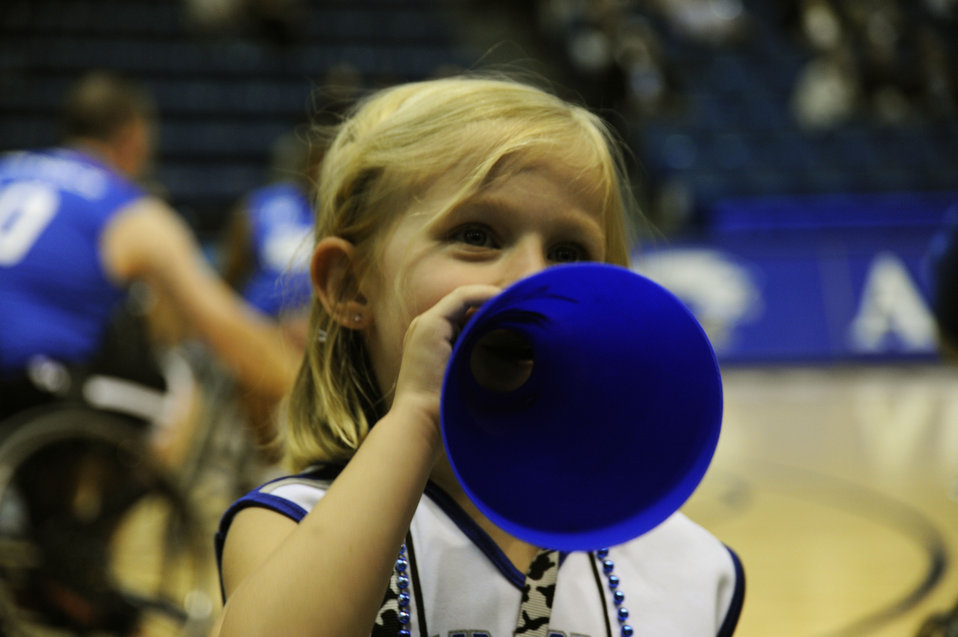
Warrior Games 2012

Air Force